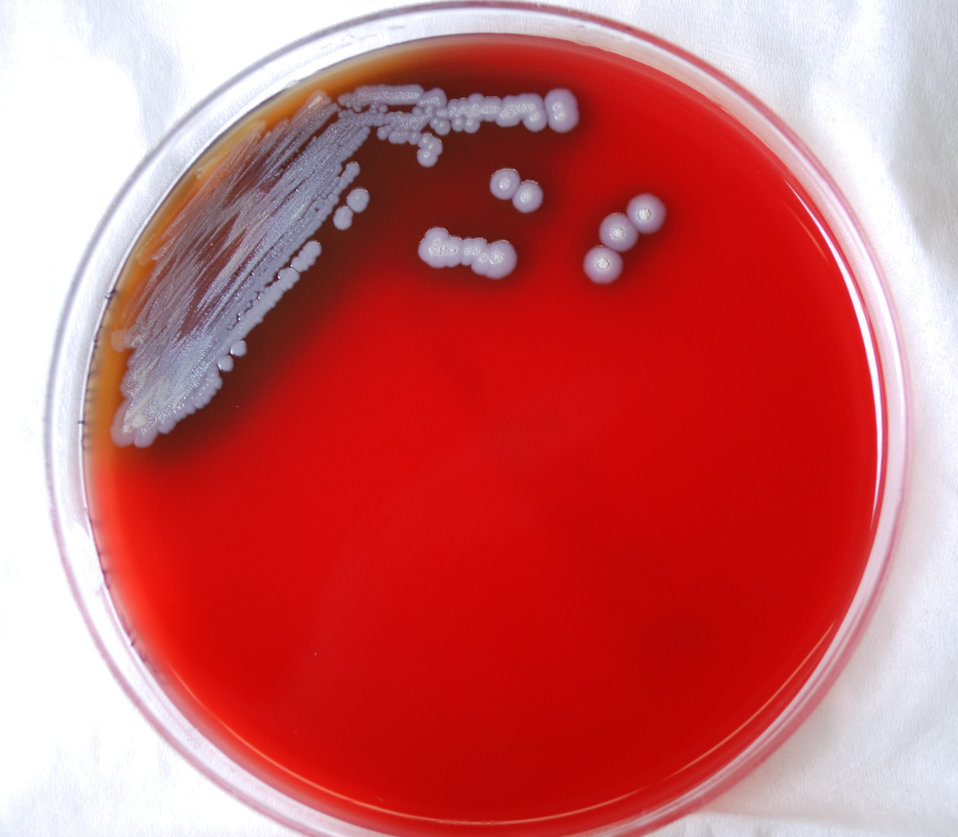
This photograph depicts the colonial morphology displayed by Gram-negative Burkholderia pseudomallei bacteria, which was grown on a medium of sheep's blood agar (SBA), for a 72 hour time period, at a temperature of 37�C. See PHIL 12276 for a closer view of these bacterial colonies.